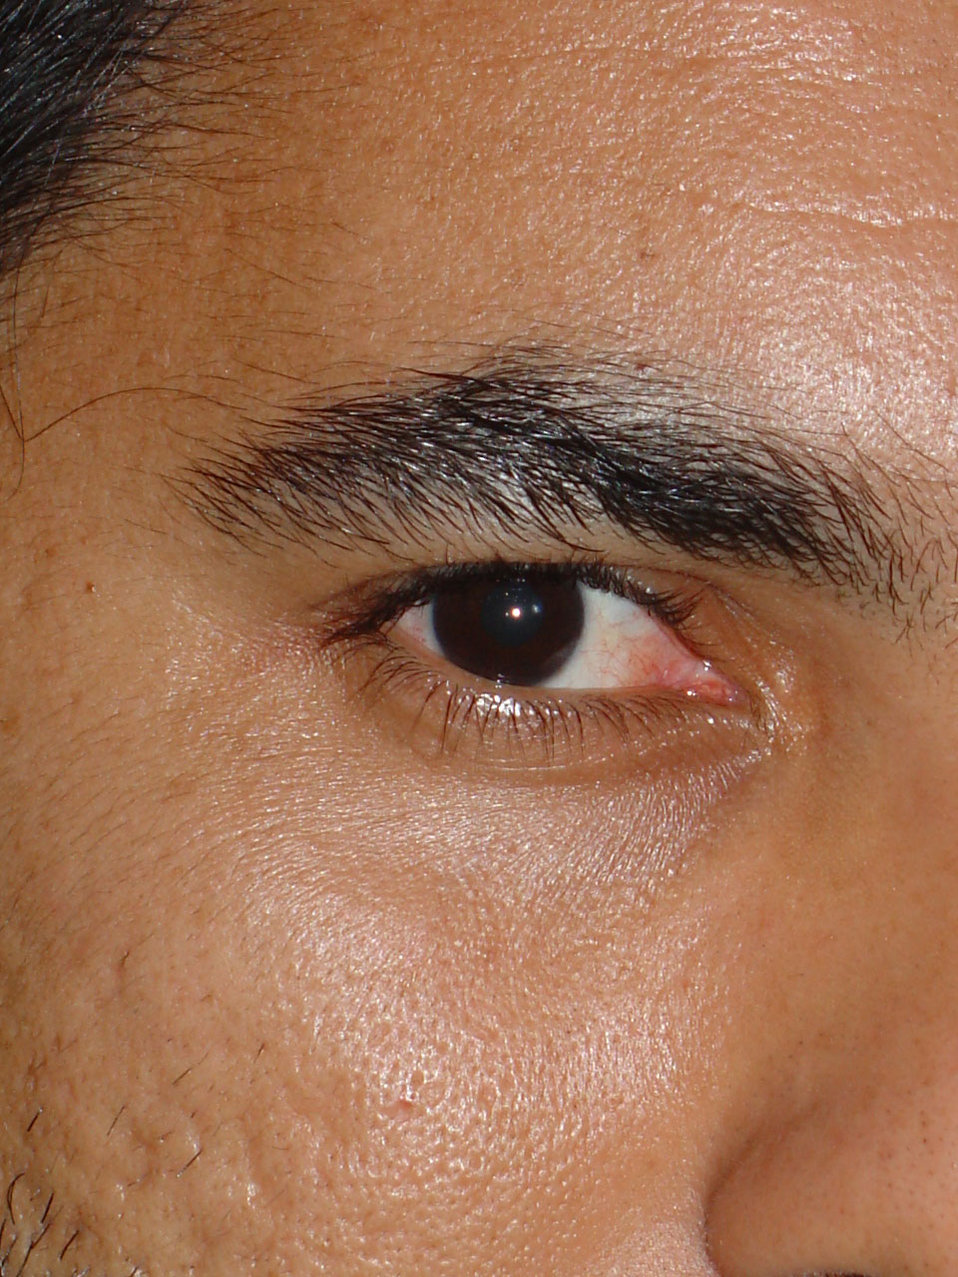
Male eye.